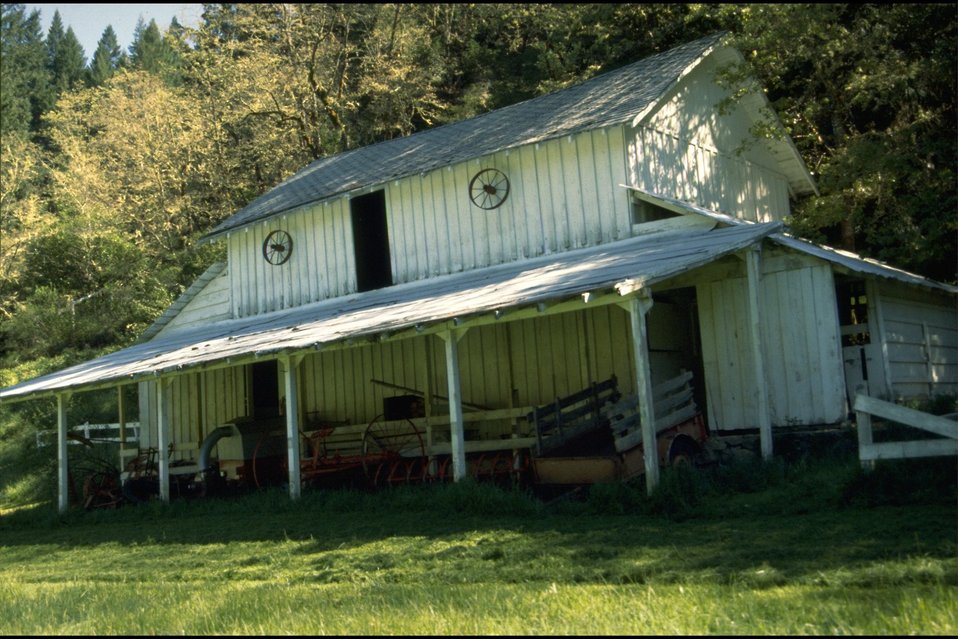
Rogue River Ranch - barn.